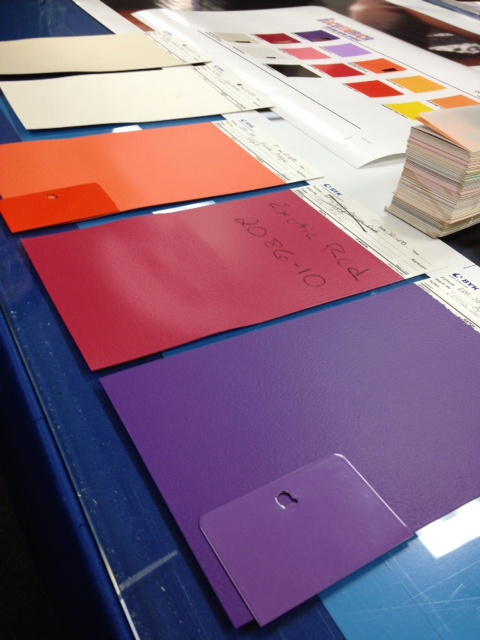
Documerica Paint Colors

Designers from the Exhibits office matching paint colors for the upcoming exhibit, 'Searching for the Seventies: The Documerica Photography Project'. Opening March 8